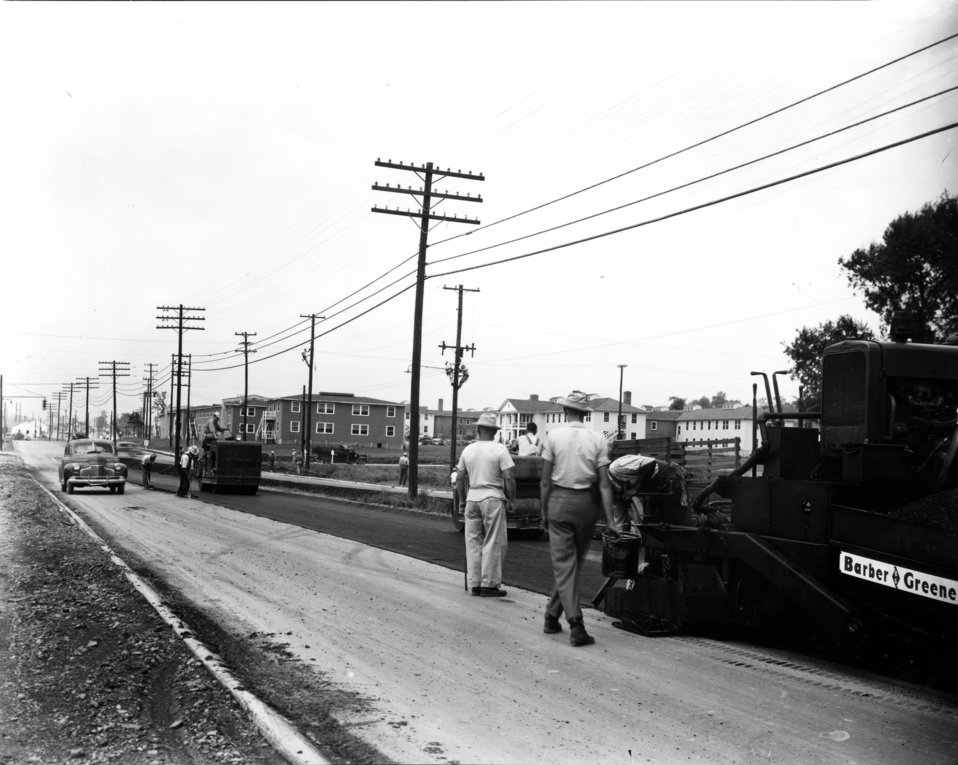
Recreation at Oak Ridge